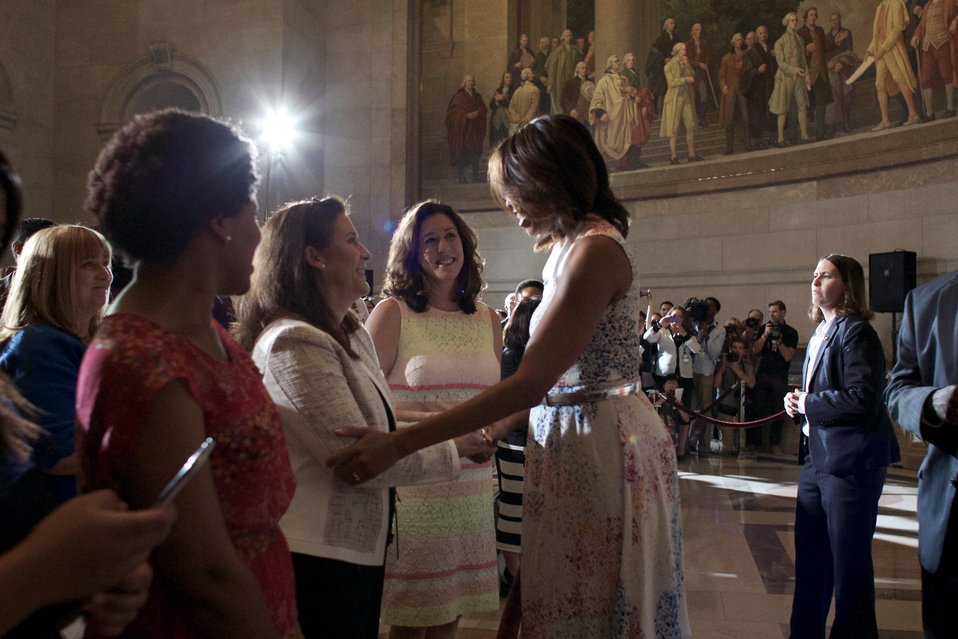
Naturalization Ceremony with Michelle Obama